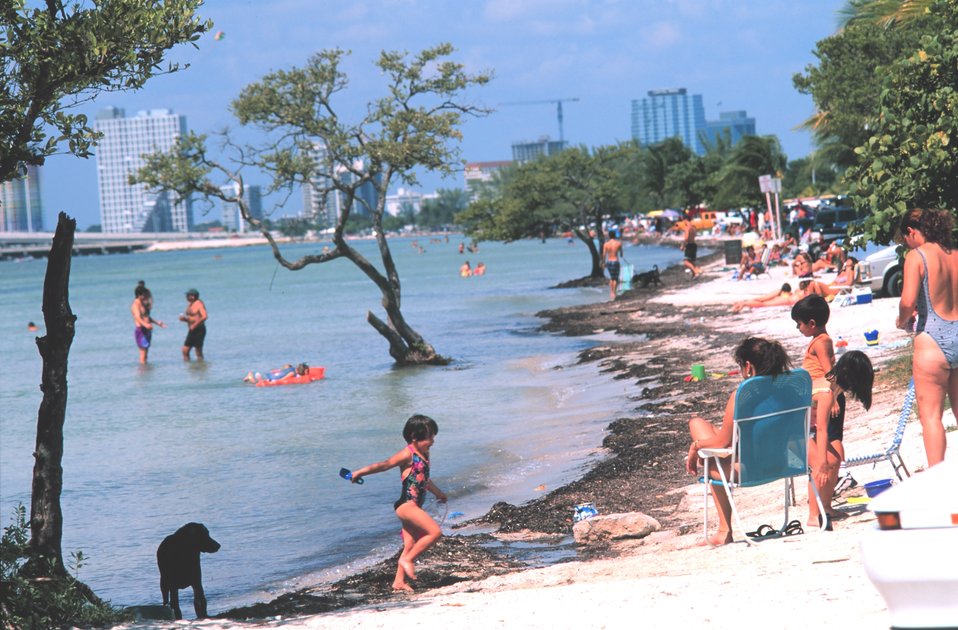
Key Biscayne Beach on the bay side of the island